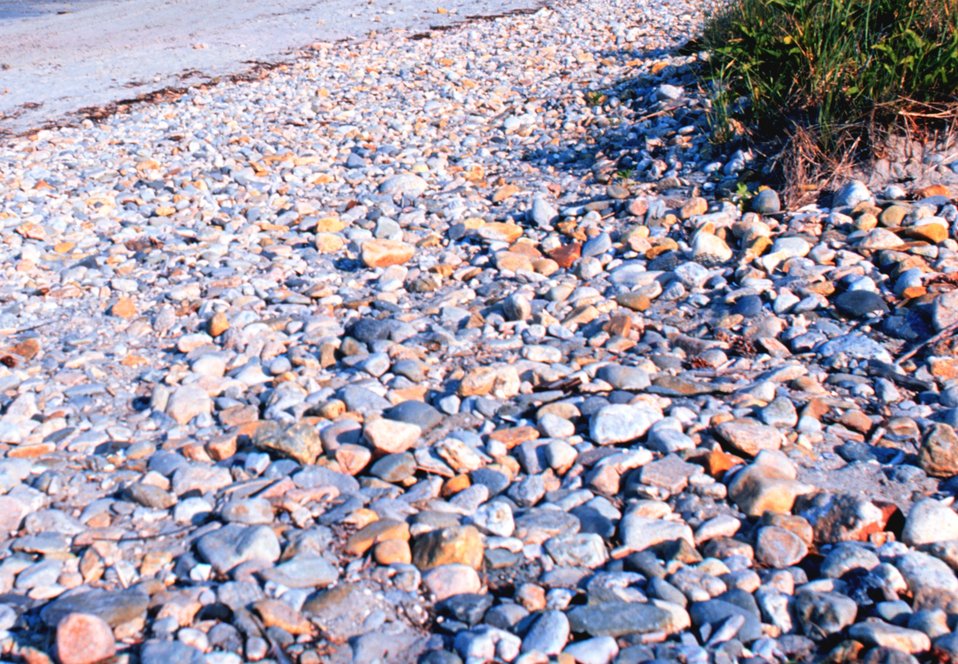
A pebbles on the beach near the port of Galilee